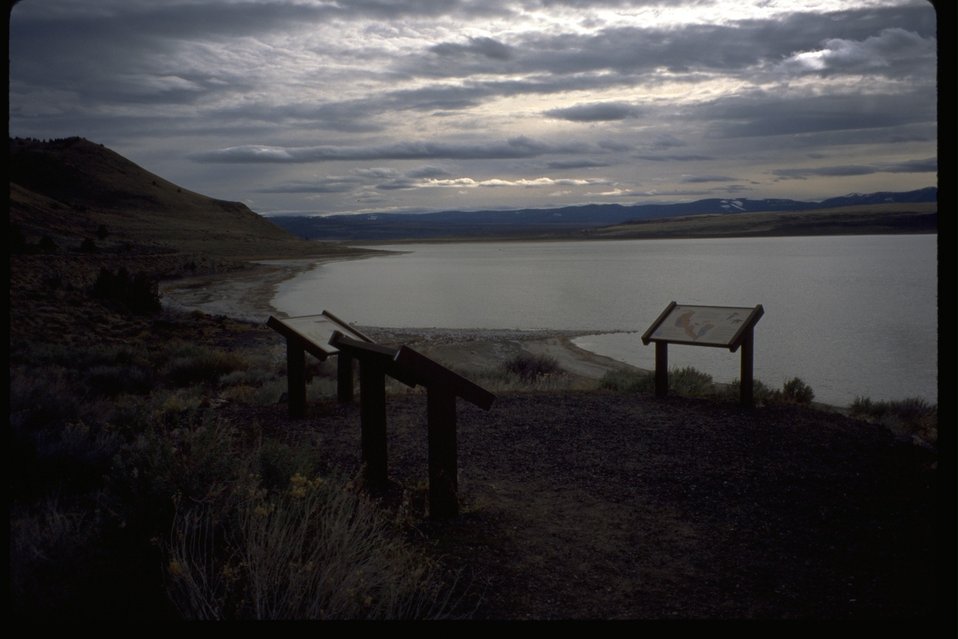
Abert Lake Watchable Wildlife interpretive panel.